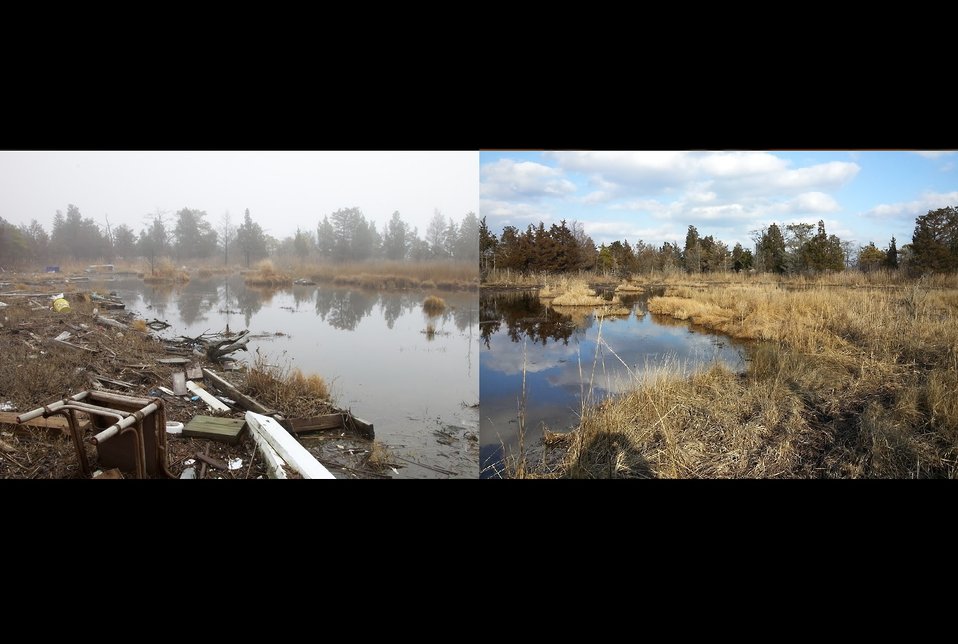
ForsytheBefore-After

As of May 1, 2014, more than 300 tons of post-Hurricane Sandy debris have been removed from coastal marshes at the Edwin B. Forsythe National Wildlife Refuge in southern New Jersey.